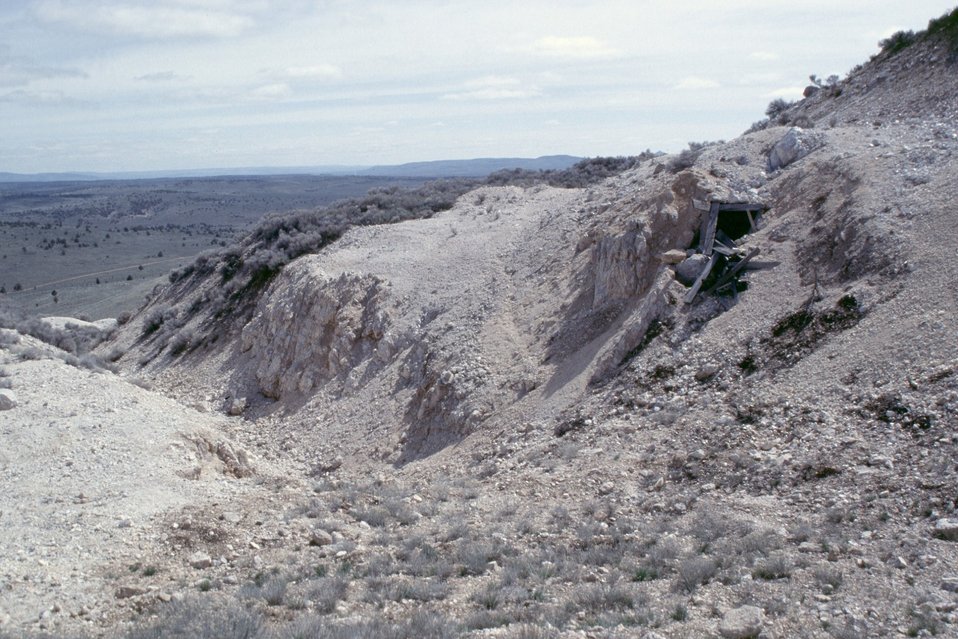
AML Glass Buttes, G3, Burns District Vegetation readily grows where seeds were spread after backfilling two abandoned mine shafts in 1999. The mine shafts were active in 1957 and were located in the foreground of this picture, about 50 feet apart. The trench was partly the site of an adit that was excavated in approximately 1957